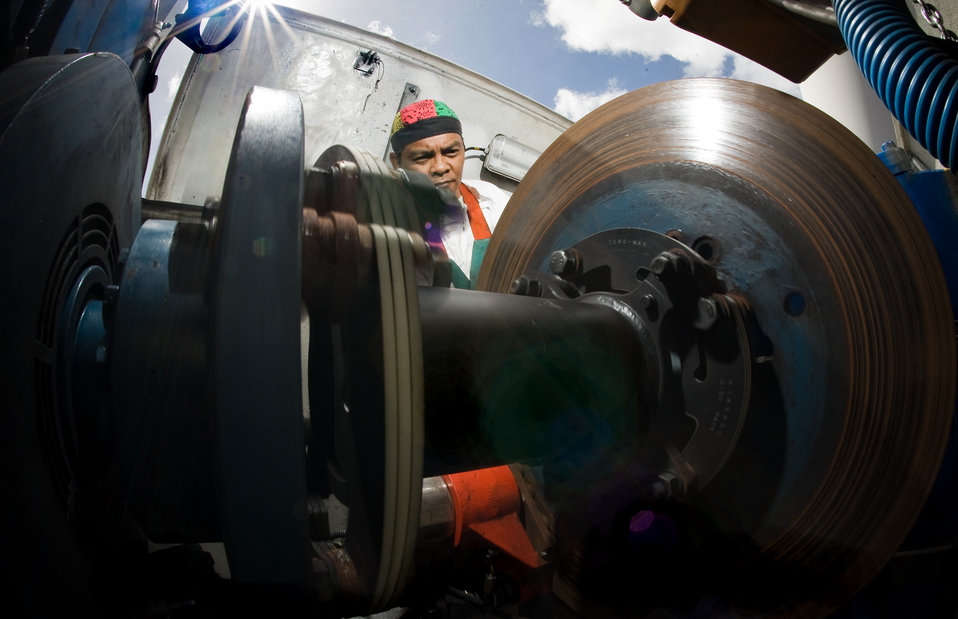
Win with Wind

Mr. Damien Cuello performs a operational check of a rotating 900kW wind turbine brake disk at 45th Operations Group Detachment 2, Ascension Auxiliary Airfield (AAF), South Atlantic Ocean. The power house operator/ mechanical associate stands at the controls on the gearbox as the approximately 160-foot propeller rotates outside. Mr. Cuello is a Computer Sciences Raytheon contract associate in charge of maintenance for the 6-wind turbine facility. The wind turbines works in parallel with low-load diesel generators powering the airfield, Space Command sites and facilities, and a royal air force airfield facility. Ascension AAF's award winning self-sufficiency solutions also includes drinking water production and waste water treatment. The mission of Det. 2 is support of eastern range space launches by collecting and disseminating radar, telemetry and tracking data. Ascension island is 35 square miles in a remote island location midway between Brazil and Angola. The nearest country is Liberia - 1000 miles away.